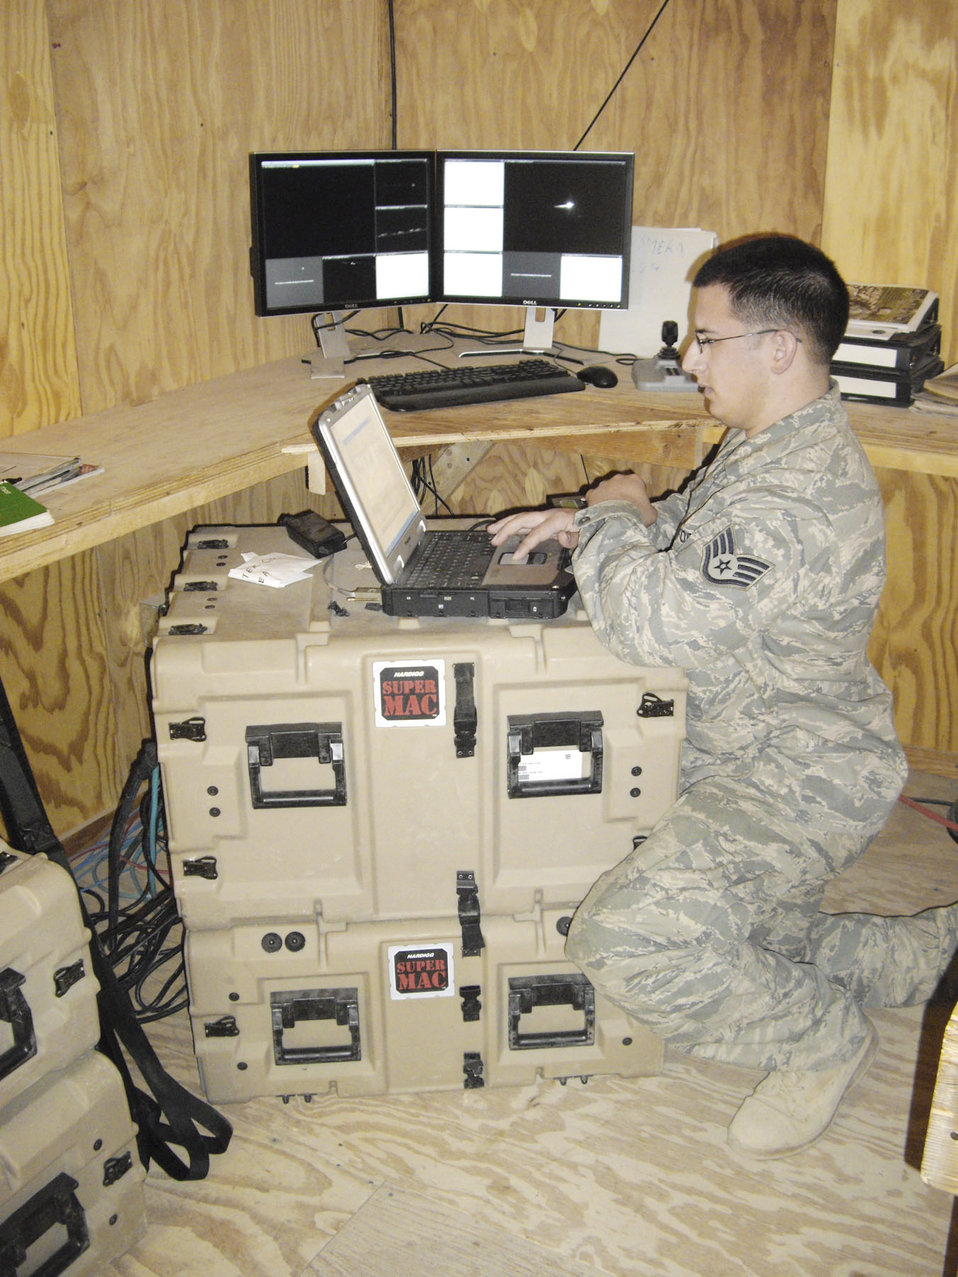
Airmen help Soldiers communicate in a virtual 'SNAP'

Staff Sgt. Shaun DeCroo works on a ruggedized laptop to help set up critical internet communications for Soldiers. Sergeant DeCroo is a deployed from the 50th Communications Squadron at Scheiver Air Force Base, Colo., and serves at an Army combat outpost in a remote section of Afghanistan.